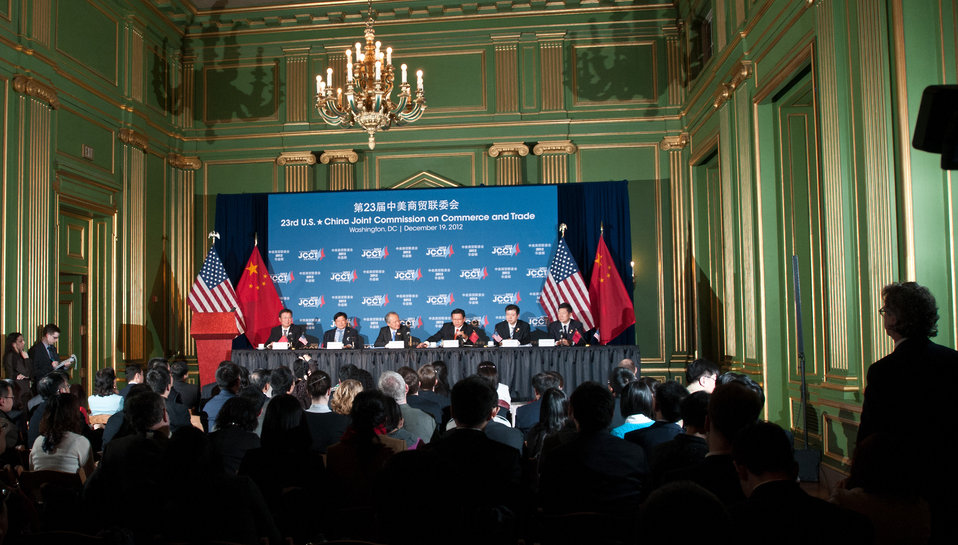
China’s Ministry of Foreign Affairs Information Department Deputy Director-General Wu Peng, Vice Minister of Finance Zhu Guangyao, Vice Foreign Minister Cui Tiankai, Minister of Commerce Chen Deming, Vice Minister of Industry and Information Technology (MIIT) Liu Lihua, Vice Minister of National Copyright Administration of China (NCAC) Yan Xiaohong answer a question from Reuters journalist Doug Palmer, right, at the 23rd Session of the U.S. China Joint Commission on Commerce and Trade (JCCT) press conference, at the Andrew W. Mellon Auditorium, Wednesday, December 19, 2012, in Washington, D.C.

The JCCT holds high-level plenary meetings on an annual basis to review progress made by working groups that focus on a wide variety of trade issues. These working groups meet throughout the year to address topics such as intellectual property rights, agriculture, pharmaceuticals and medical devices, information technology, tourism, commercial law, environment, and statistics.

Established in 1983, the JCCT is the main forum for addressing bilateral trade issues and promoting commercial opportunities between the United States and China. The2011 JCCT meeting was held in Chengdu, China, where China agreed, among other issues, to improve intellectual property enforcement, delink innovation policies to government procurement preferences, and provide a fair and level playing field in China’s Strategic Emerging Industries.